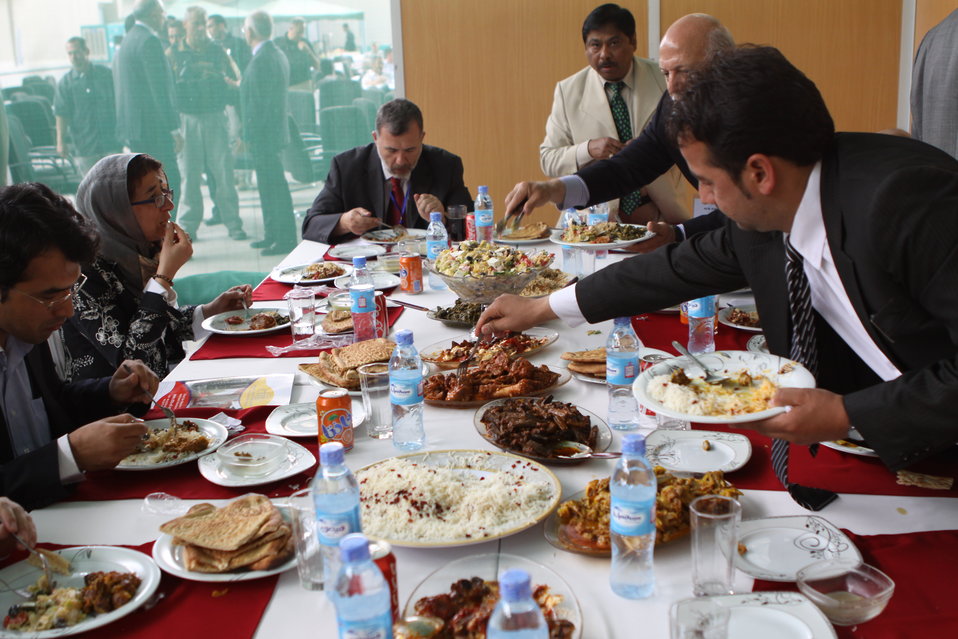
100525 Hirat Marble Conference 553